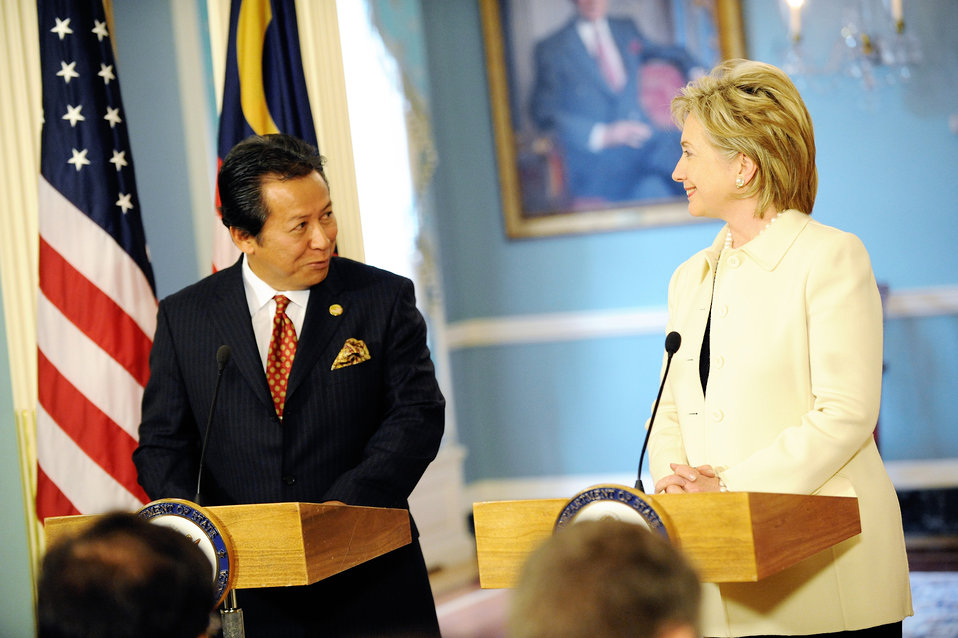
Secretary Clinton Meets With Malaysian Foreign Minister

U.S. Secretary of State Hillary Rodham Clinton hosts a bilateral meeting with Malaysian Foreign Minister Y.B. Datuk Anifah bin Haji Aman in the Treaty Room of the U.S. Department of State in Washington, DC May 14, 2009.